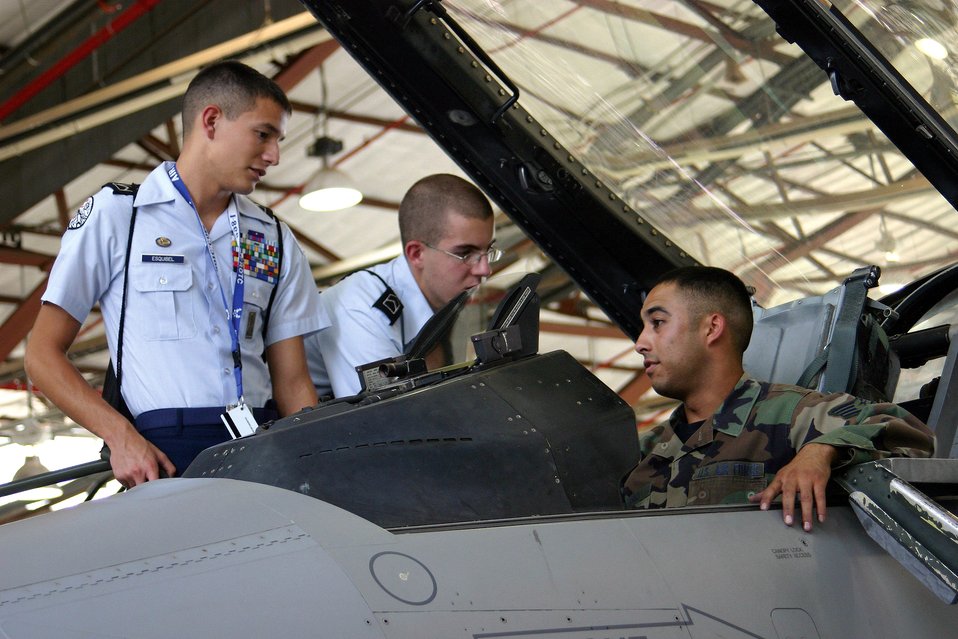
Junior ROTC cadets explore Air Force careers

Air Force Junior ROTC Cadets Kyle Esquibel and Daniel Phalin look inside the cockpit of an F-16 Fighting Falcon as Staff Sgt. Luis Otero explains some of the controls. Sergeant Otero and the F-16 are from the New Mexico Air National Guard's 150th Fighter Wing at Kirtland Air Force Base, N.M. Cadets from Junior ROTC units worldwide visited various science and technology centers and several Air Force bases as part of the 2007 Air Force Junior ROTC Aerospace and Technology Honor Camps. Approximately 450 cadets attended one of eight camps this year in New Mexico and Oklahoma. Currently, there are more than 100,000 cadets in the Air Force Junior ROTC program worldwide.